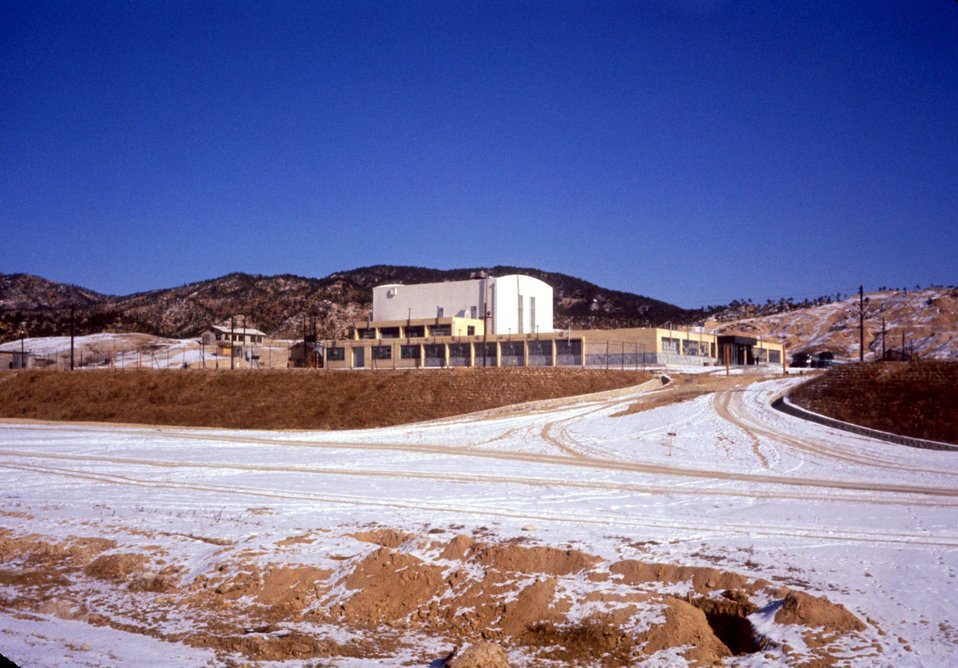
ROK Reactor Body. Korean 100kw Triga Reactor. Soel, Korea. Atoms for Peace Reactor. c. 1961